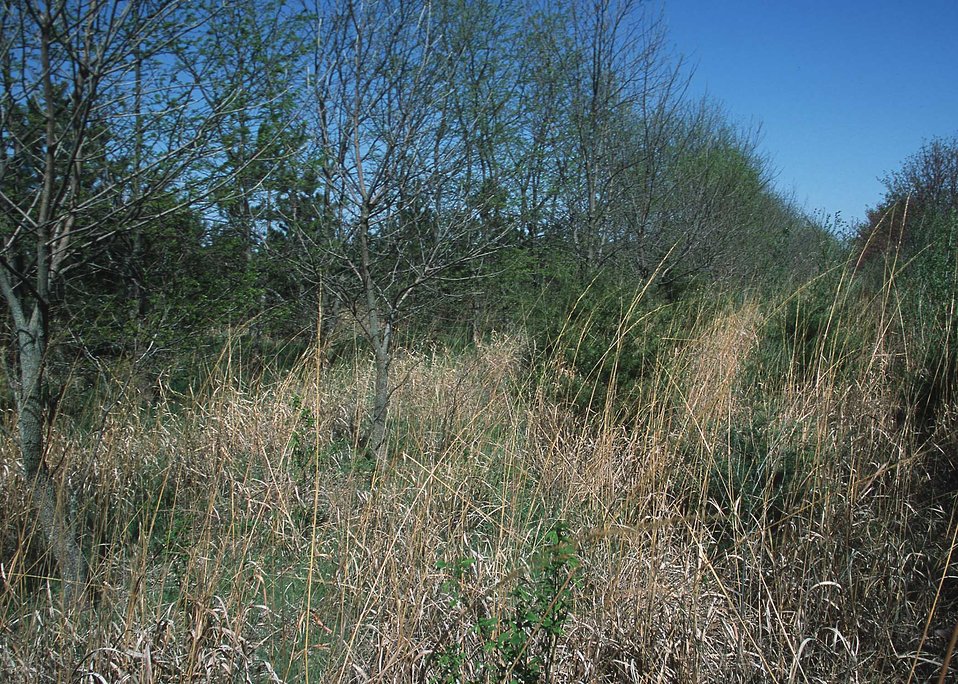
Twelve year old winddbreak installed under the CRP program. Kansas.